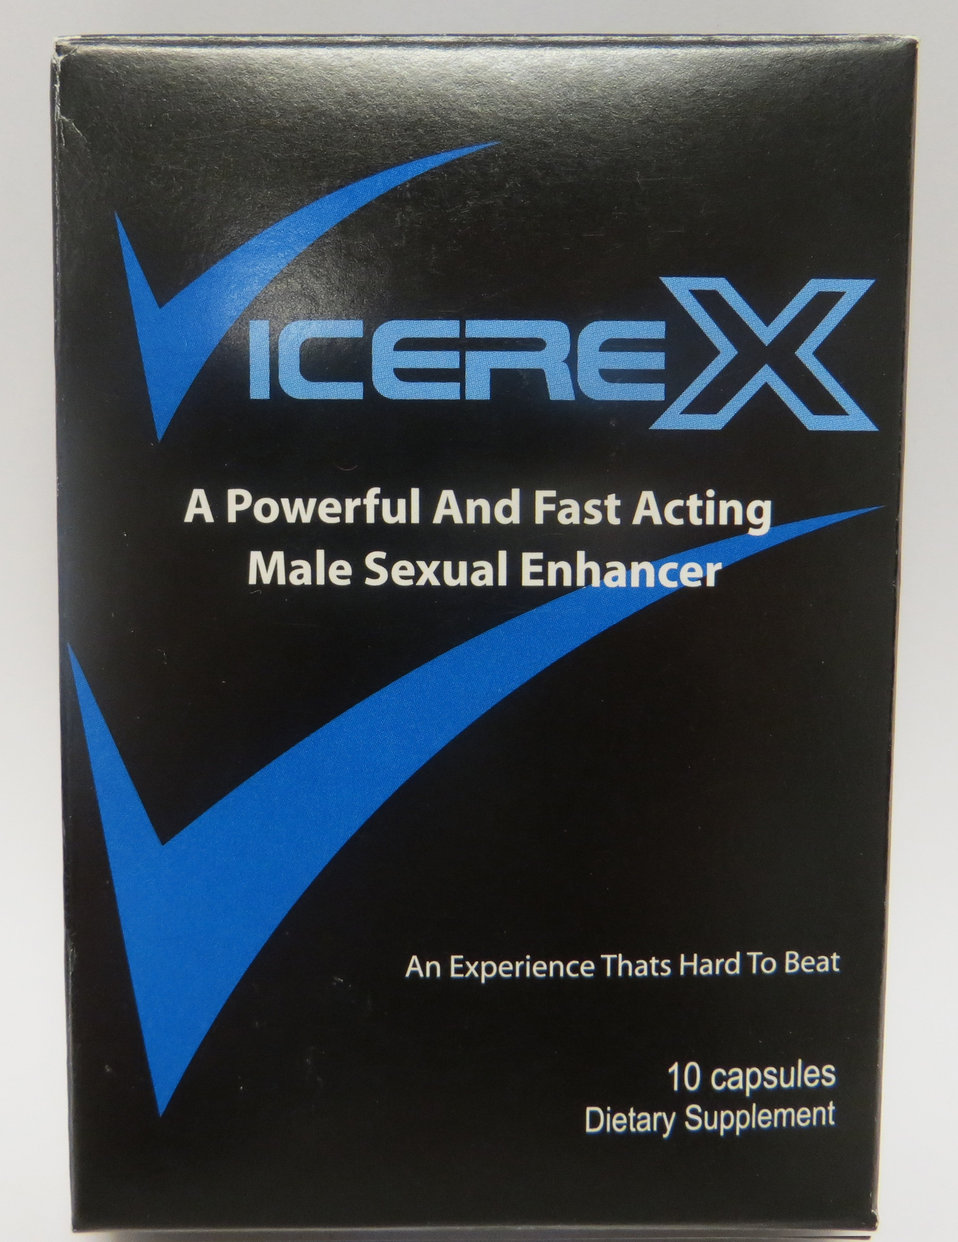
Vicerex

May 1, 2013 - The FDA is advising consumers not to purchase or use 'Vicerex,' a product promoted and sold for sexual enhancement. The product was found to contain undeclared tadalafil. For more information, go to www.fda.gov/Safety/Recalls/ucm350574.htm

And read this Consumer Update: Beware of Fraudulent ‘Dietary Supplements’